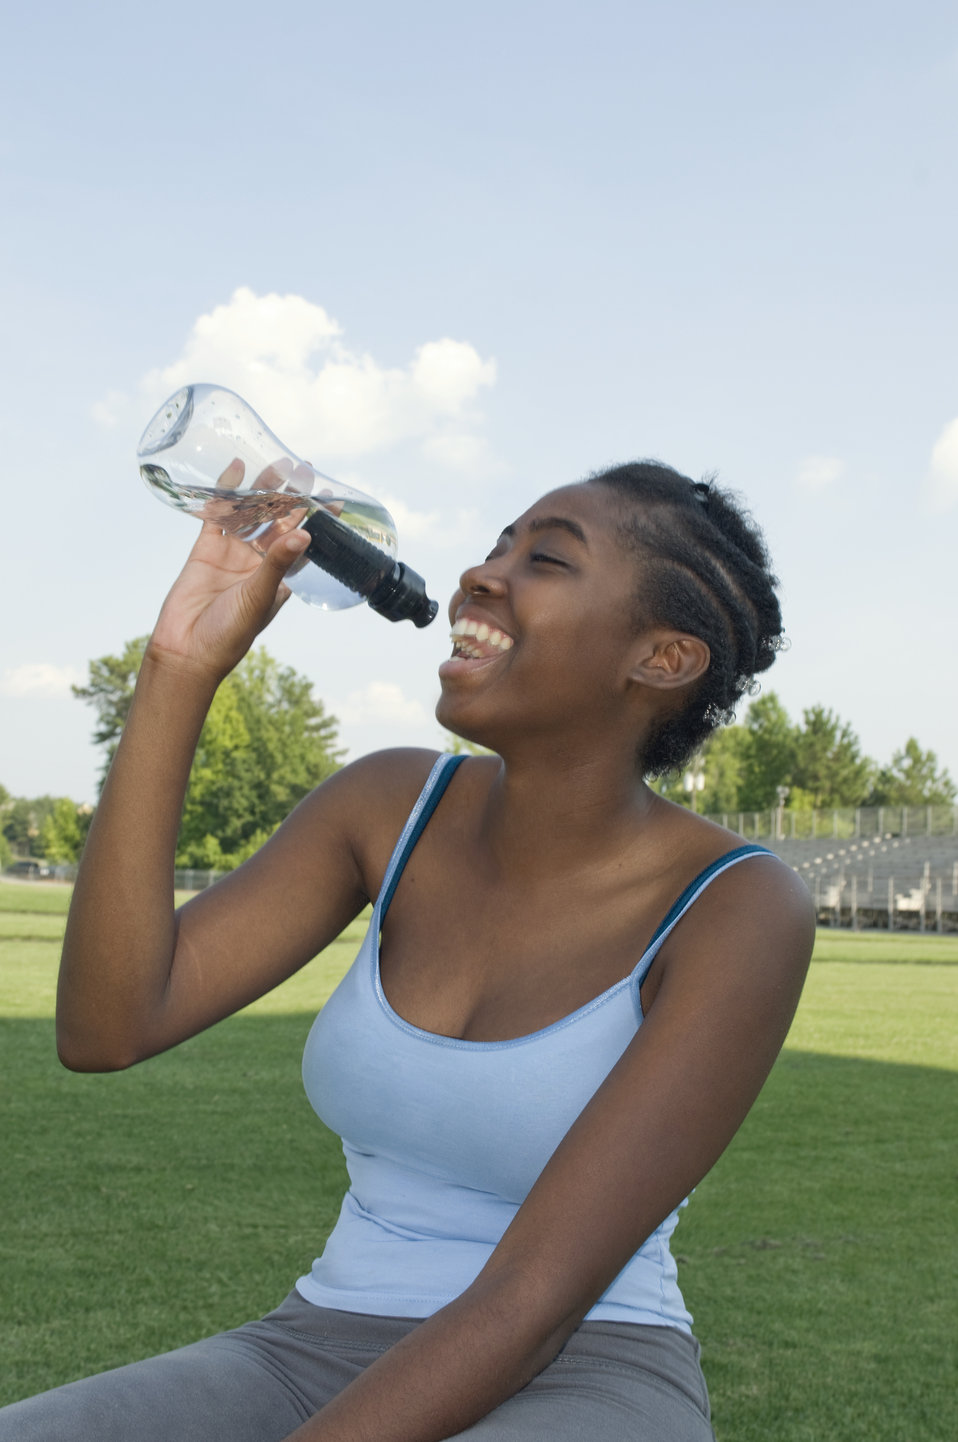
The young woman photographed here, was getting in some exercise time at a Georgia running track. At this moment, she had stopped to take a break, in order to drink some refreshing water from a bottle she'd brought with her from her home. This would help rehydrate her after a vigorous outdoor exercise routine. Hopefully, she'd applied sunscreen to her sun-exposed skin prior to her time outdoors at this public facility.